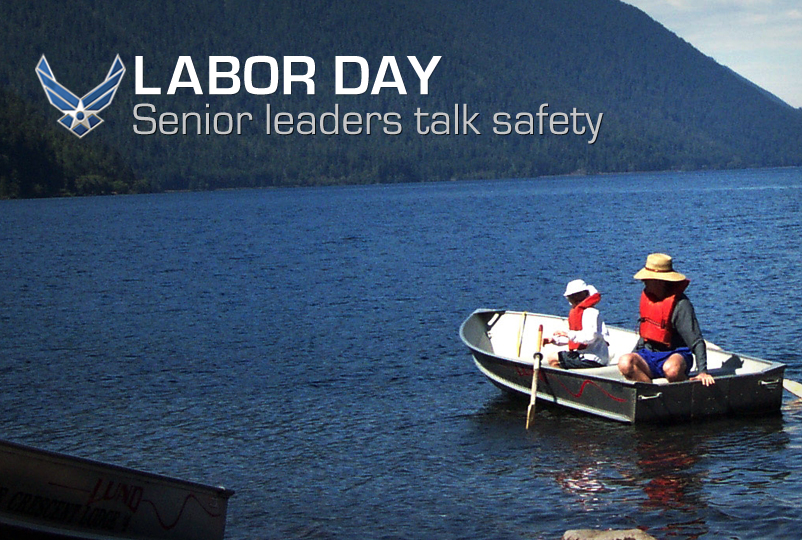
AF leaders deliver Labor Day message